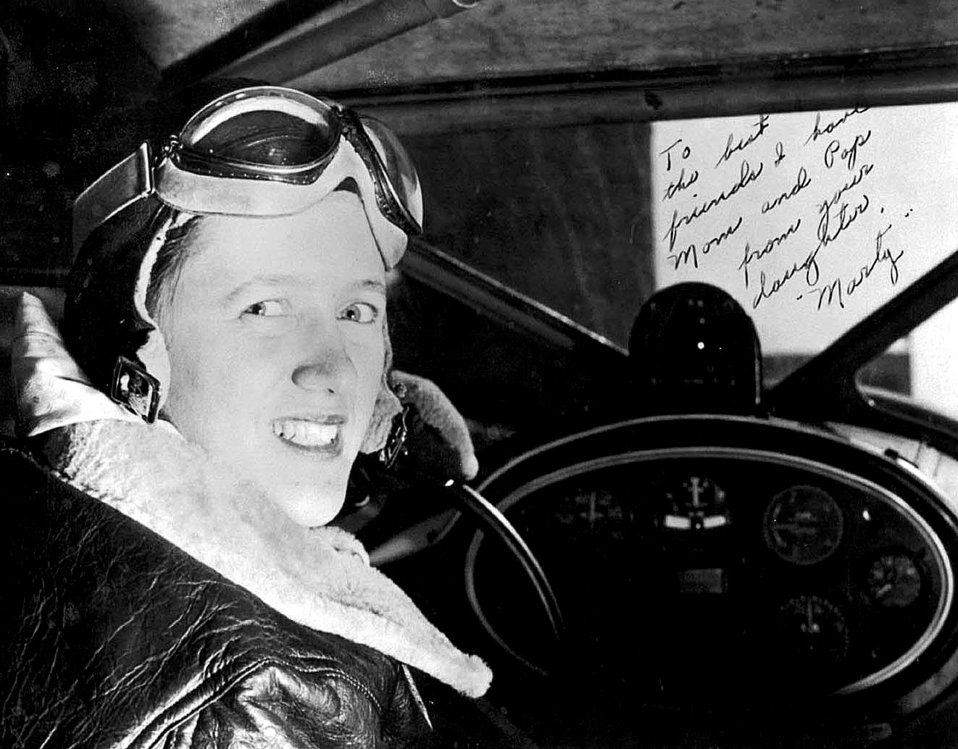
Flying 'bug' bites WASP early

1940's -- SWEETWATER, Texas -- Marty Volkomener sits in the cockpit of her training aircraft at the start of her Women's Airforce Service Pilots class in 1943. This signed photo is just one of the memories she has of that time.